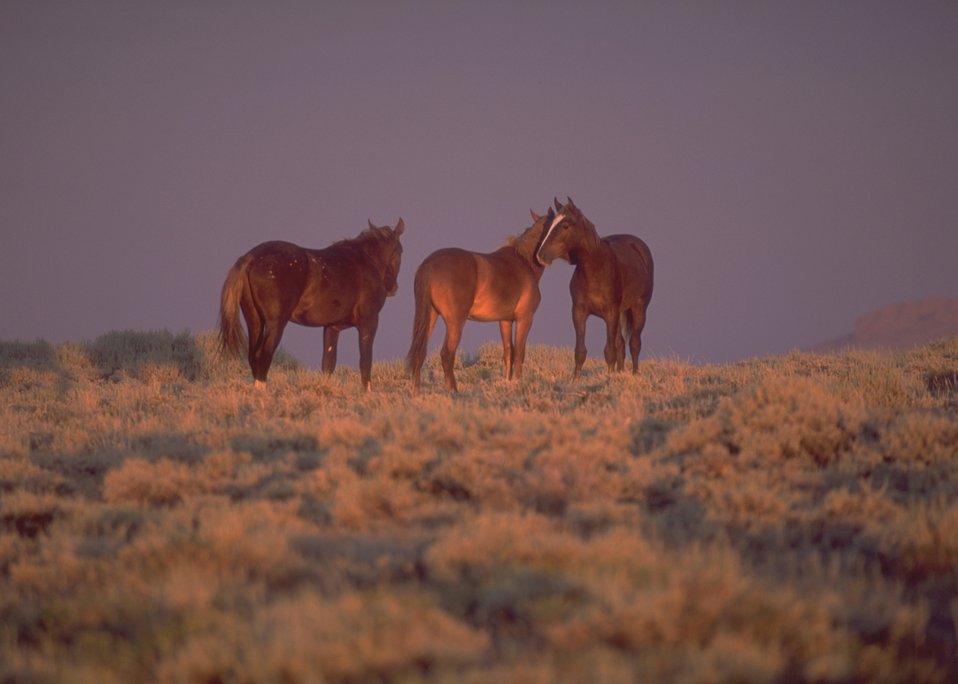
Wild horses, Rock Springs Field Office.